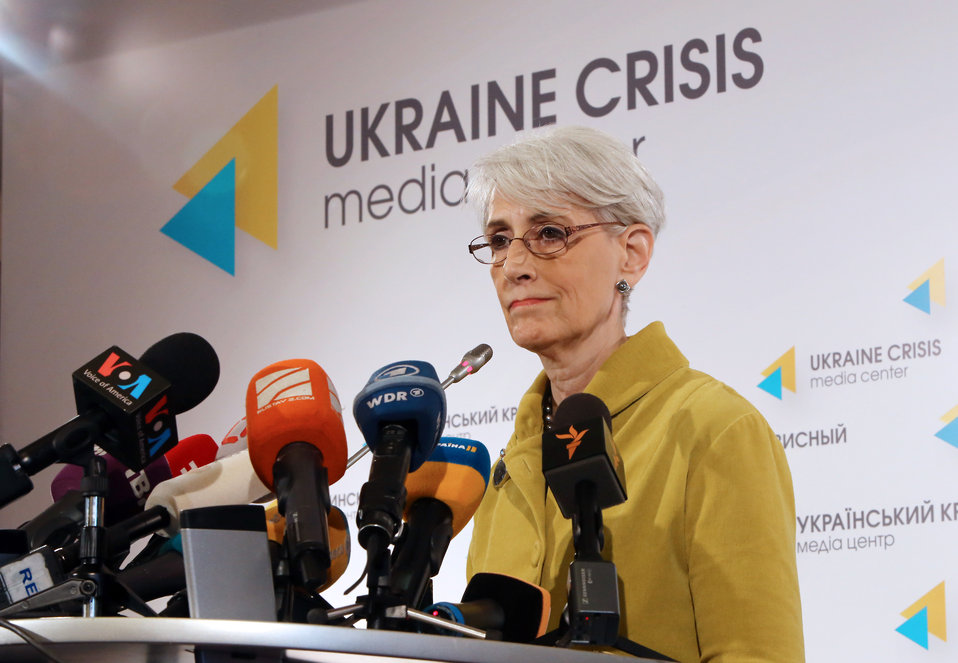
Under Secretary Sherman Addresses Reporters in Kyiv, Ukraine

Under Secretary of State for Political Affairs Wendy Sherman addresses reporters in Kyiv, Ukraine, on March 20, 2014.